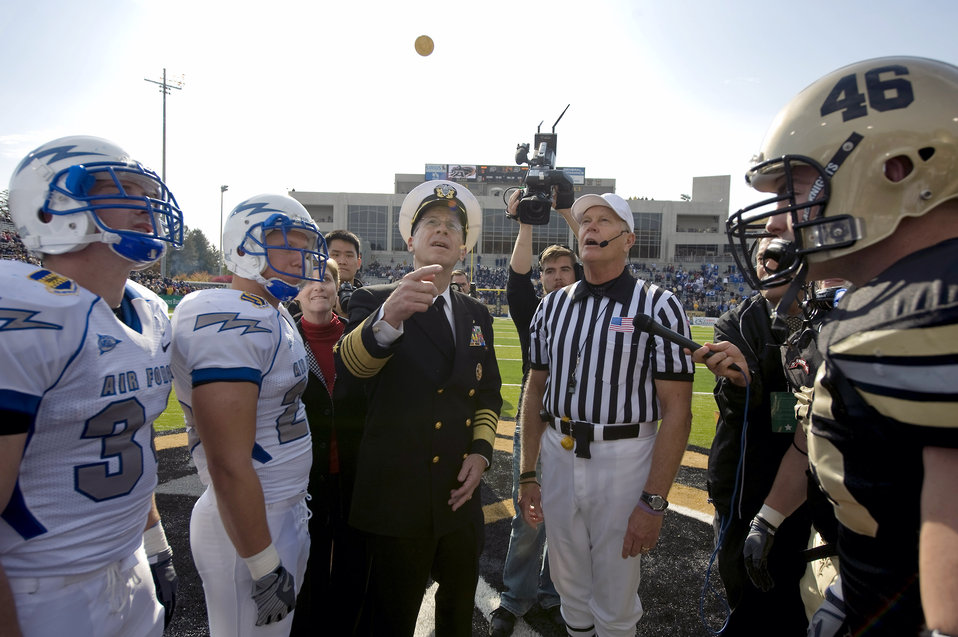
Call it!

Adm. Mike Mullen, chairman of the Joint Chiefs of Staff, flips a coin at the football game Nov. 1 between the U.S. Military Academy Black Knights and the U.S. Air Force Academy Falcons at West Point, N.Y. The Falcons won the game, 16-7.